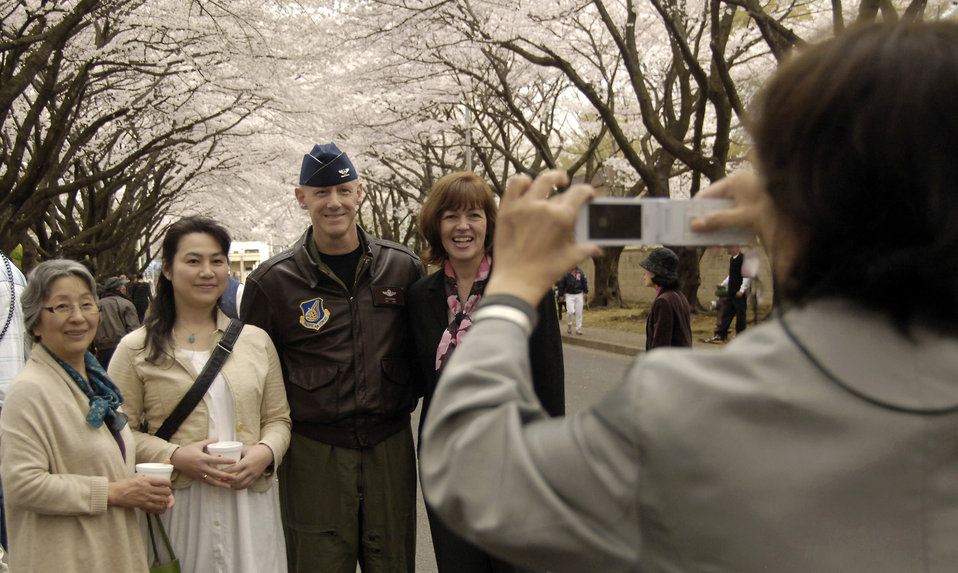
Cherry Blossom Festival at Yokota AB

Col. Otto Feather and his wife, Nancy, pause for a picture with a Japanese family April 10, 2011 at the Cherry Blossom Open House at Yokota Air Base, Japan. Base officials opened the gates to the public, allowing the local Japanese community to come on to Yokota to see the trees in full bloom. Colonel Feather is the 374th Airlift Wing commander.